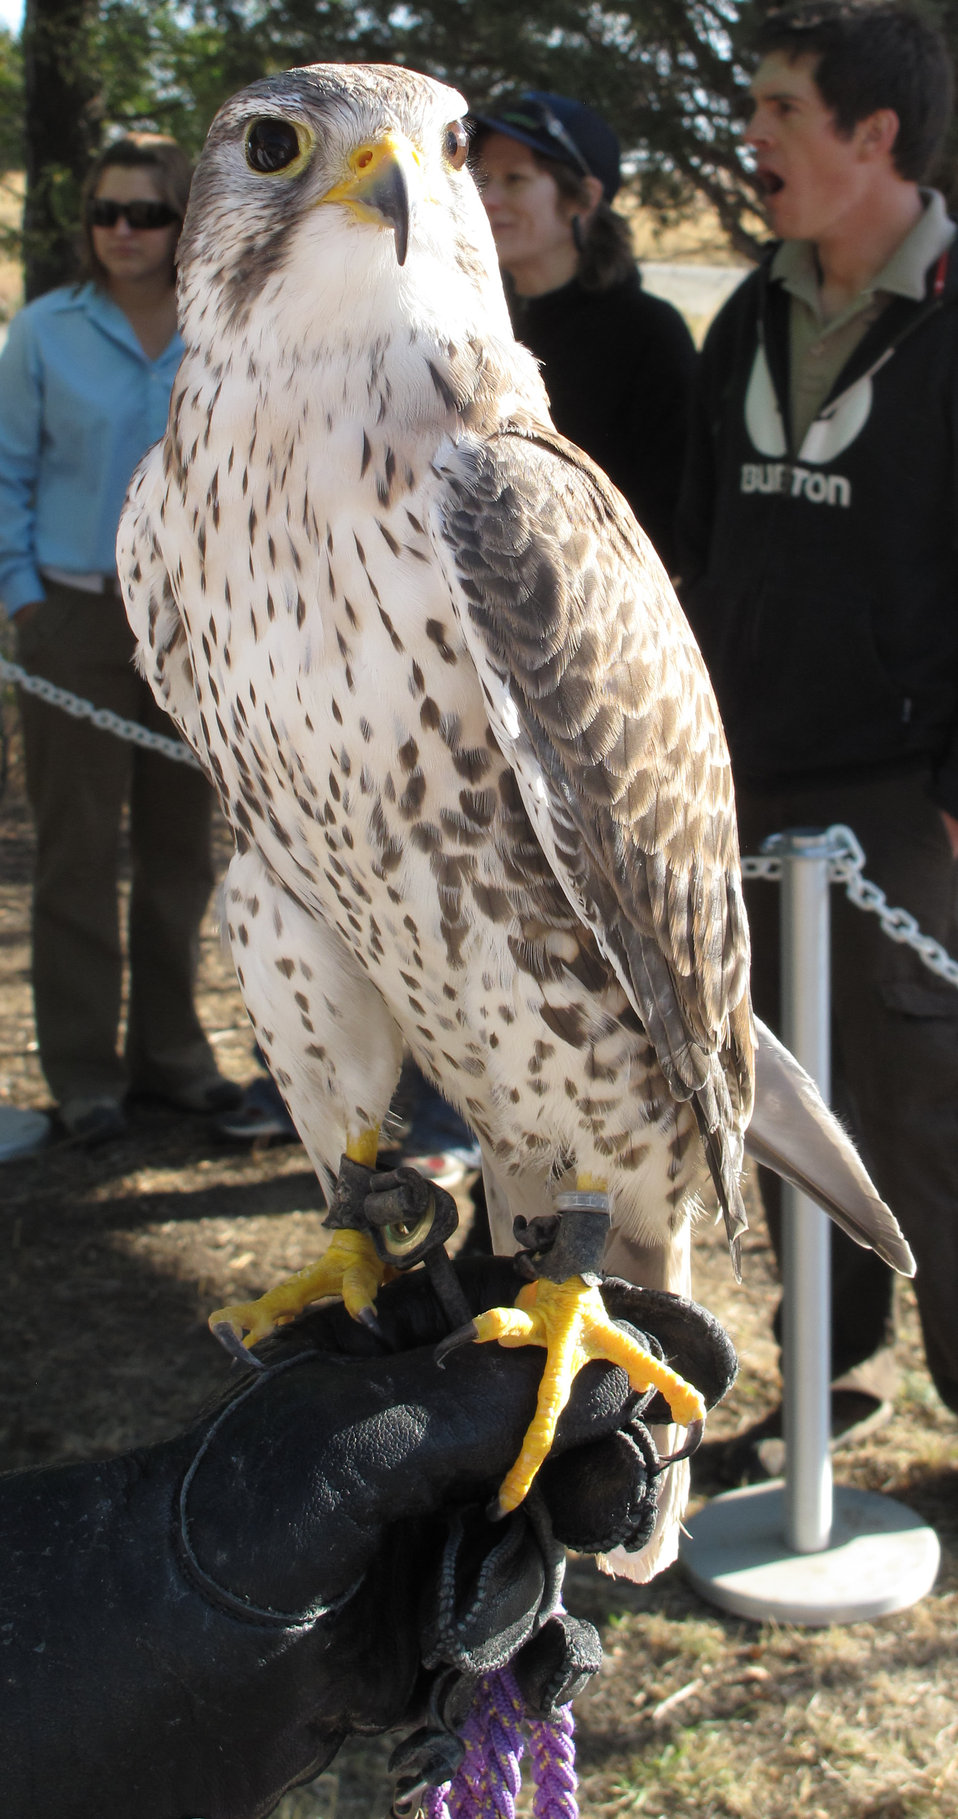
Refuge Round-Up 2010